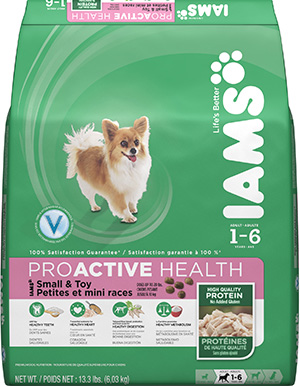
RECALLED – Dog and Cat foods - Dry

August 14, 2013 – Product Recall – P&G Voluntarily Recalls Limited Quantity of Dry Pet Food Due to Possible Health Risk.